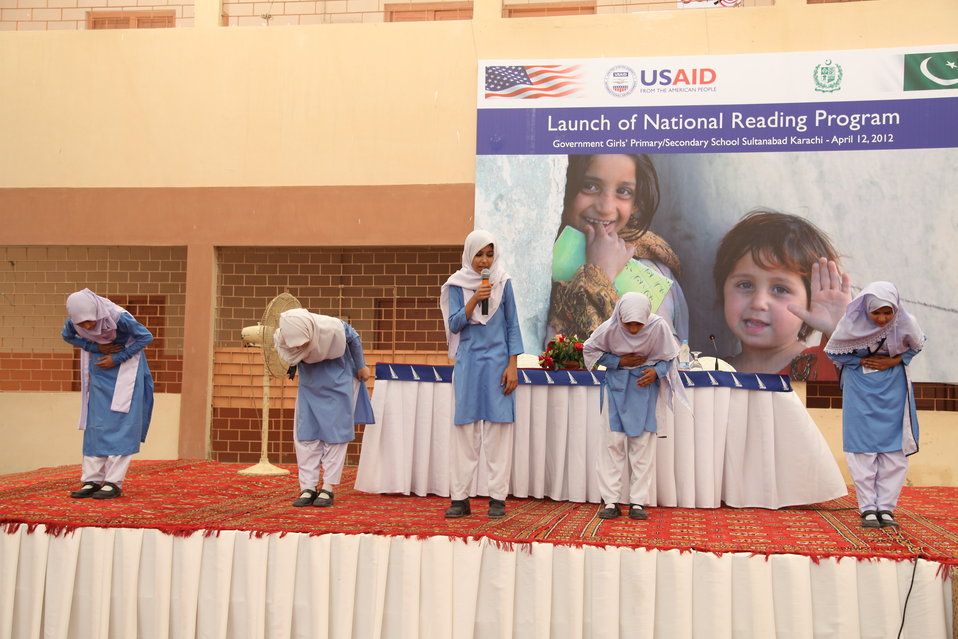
Launch of the USAID National Reading Program in Karachi on April 12, 2012.

Childrens are performing on Launching Ceremony of National Reading Program in Karachi